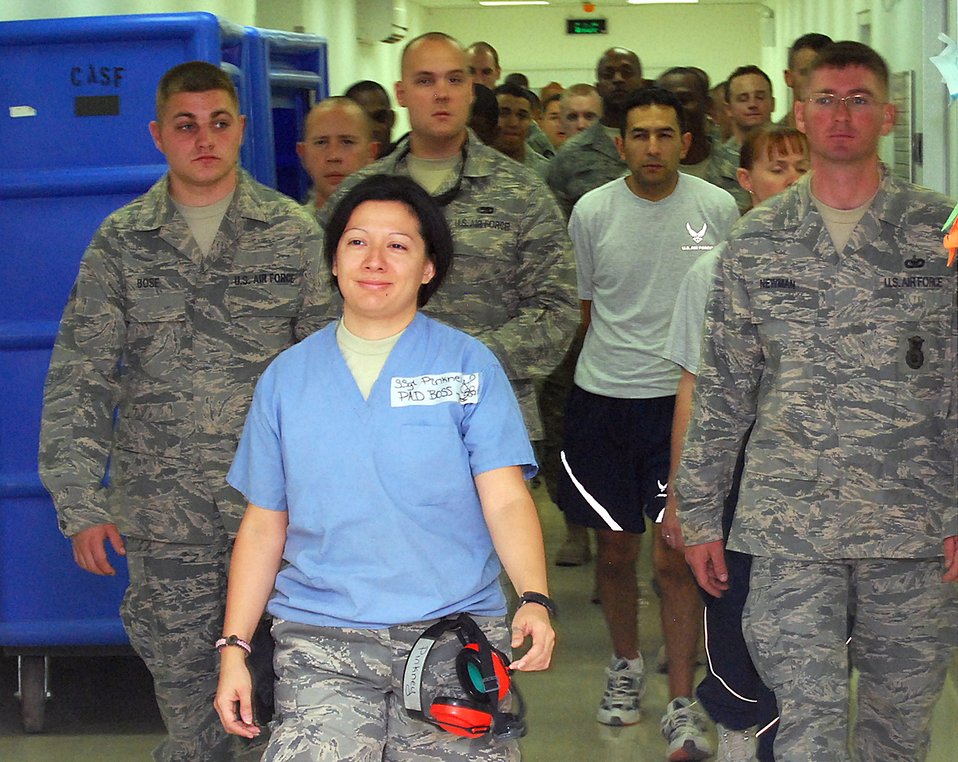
Volunteers form critical link in the 'care chain'

Staff Sgt. Angelica Pinkney takes more than 30 first-time Patient Administration and Disposition volunteers on a tour of the Air Force Theater Hospital at Joint Base Balad, Iraq, Oct. 22. The tour included areas where patients may need to be moved, such as the intensive care unit, intensive care ward and emergency room. Sergeant Pinkney, the night PAD boss for the 332nd Expeditionary Medical Support Squadron and a native of Freeport, Texas, is deployed from Wilford Hall Medical Center at Lackland Air Force Base, Texas.